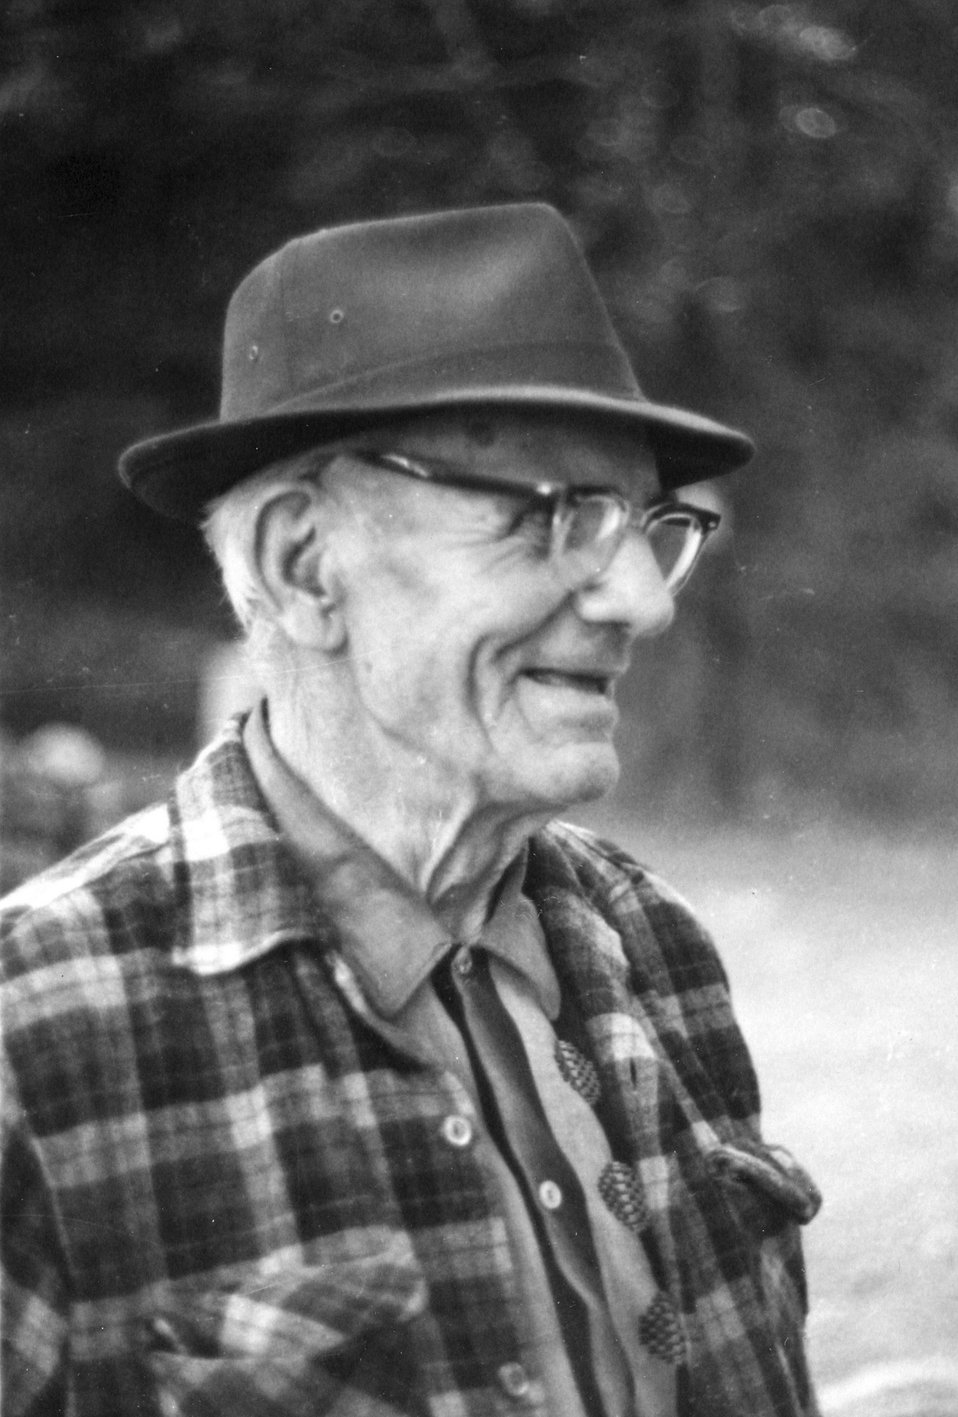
Ivin Billings C. 1977